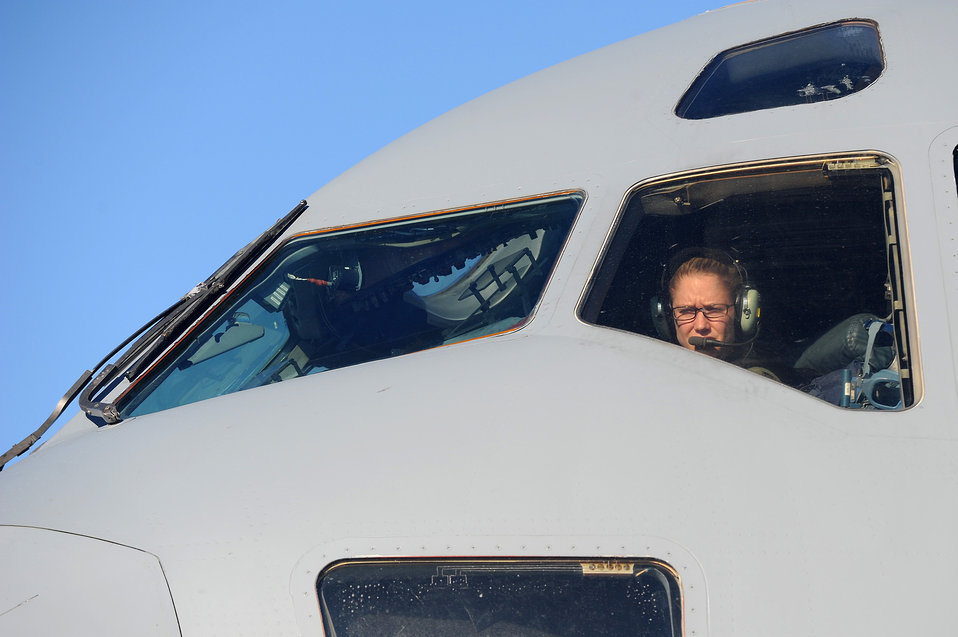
C-17 mission

Capt. Sean Henry prepares to fly a mission in support of Hurricane Sandy relief efforts Nov. 1, 2012, at Joint Base Charleston, S.C. The C-17 aircrew from the 437th Airlift Wing flew to March Air Reserve Base, Calif., to pick up utility trucks for transportation to New York. Henry is a C-17 Globemaster III pilot from the 16th Air Lift Squadron.